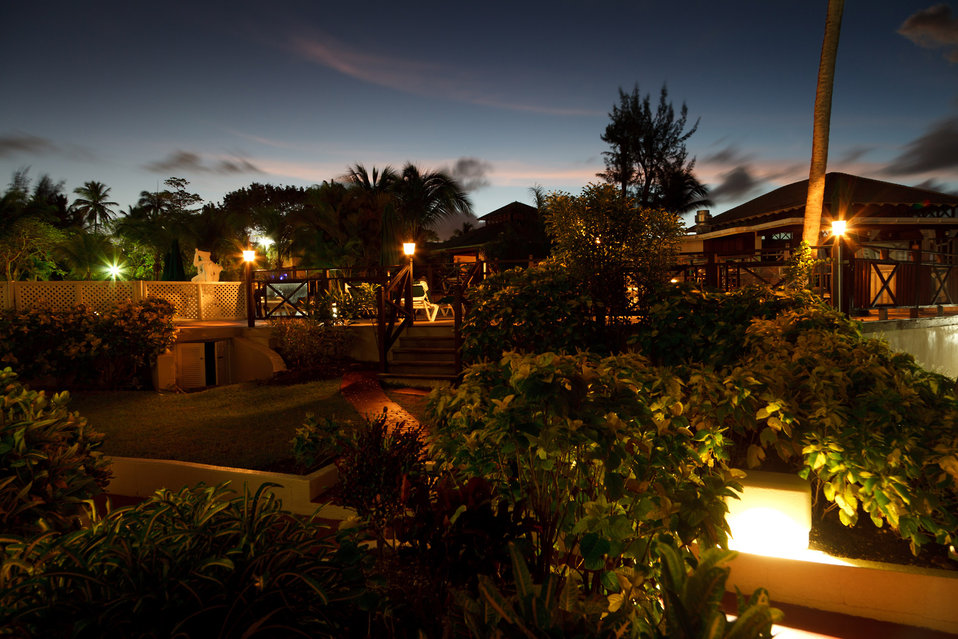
Tropical resort in the morning

Tropical resort early in the morning.